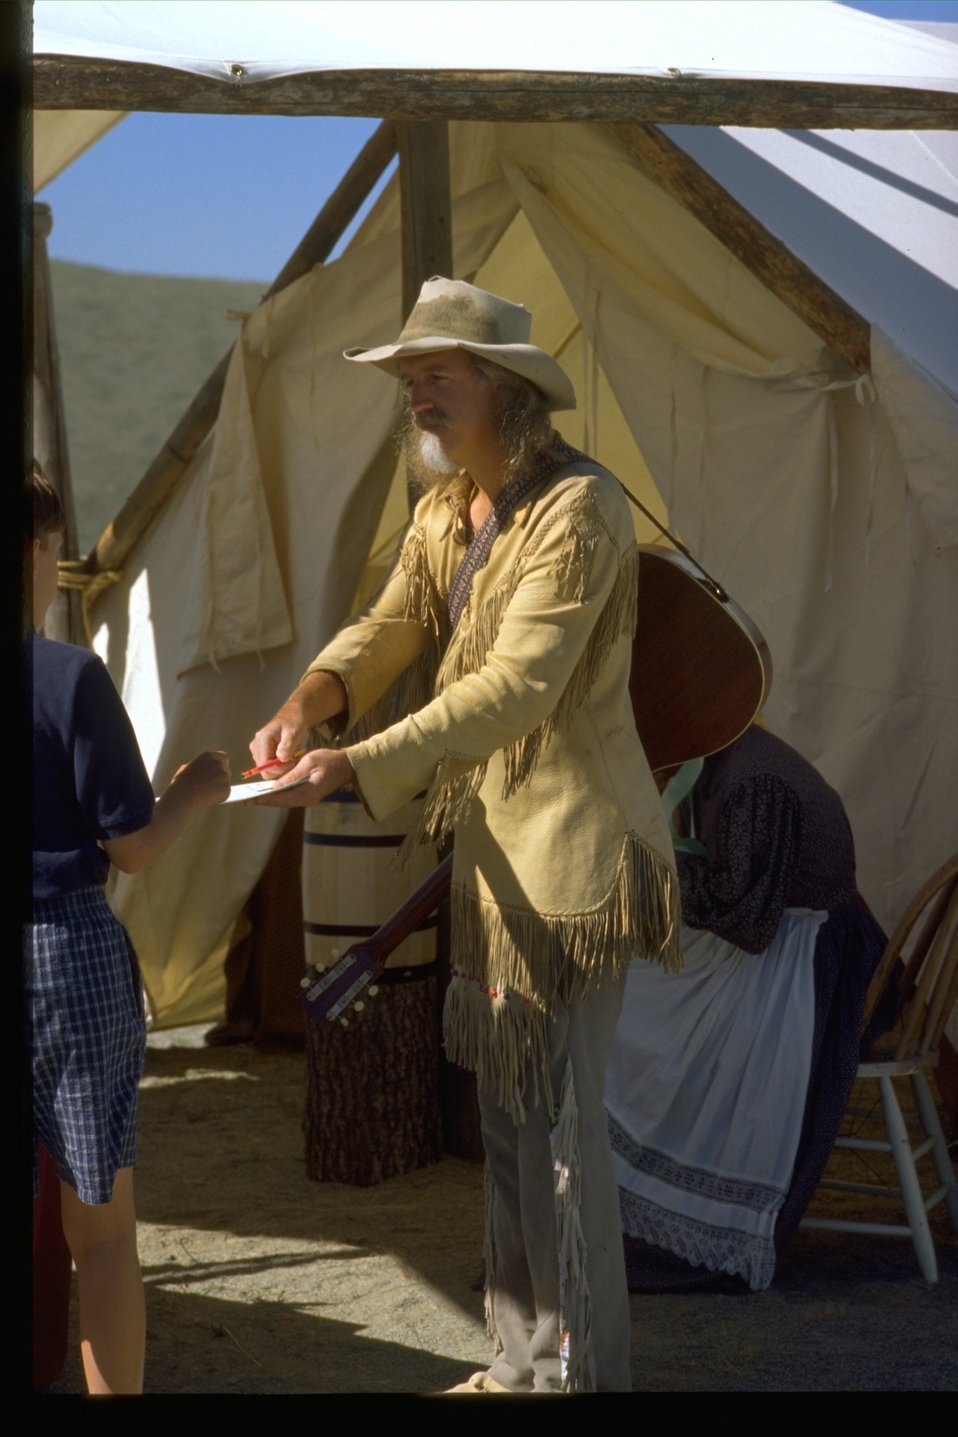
Bill Buycott from the Pioneer Festival at the NHOTIC.